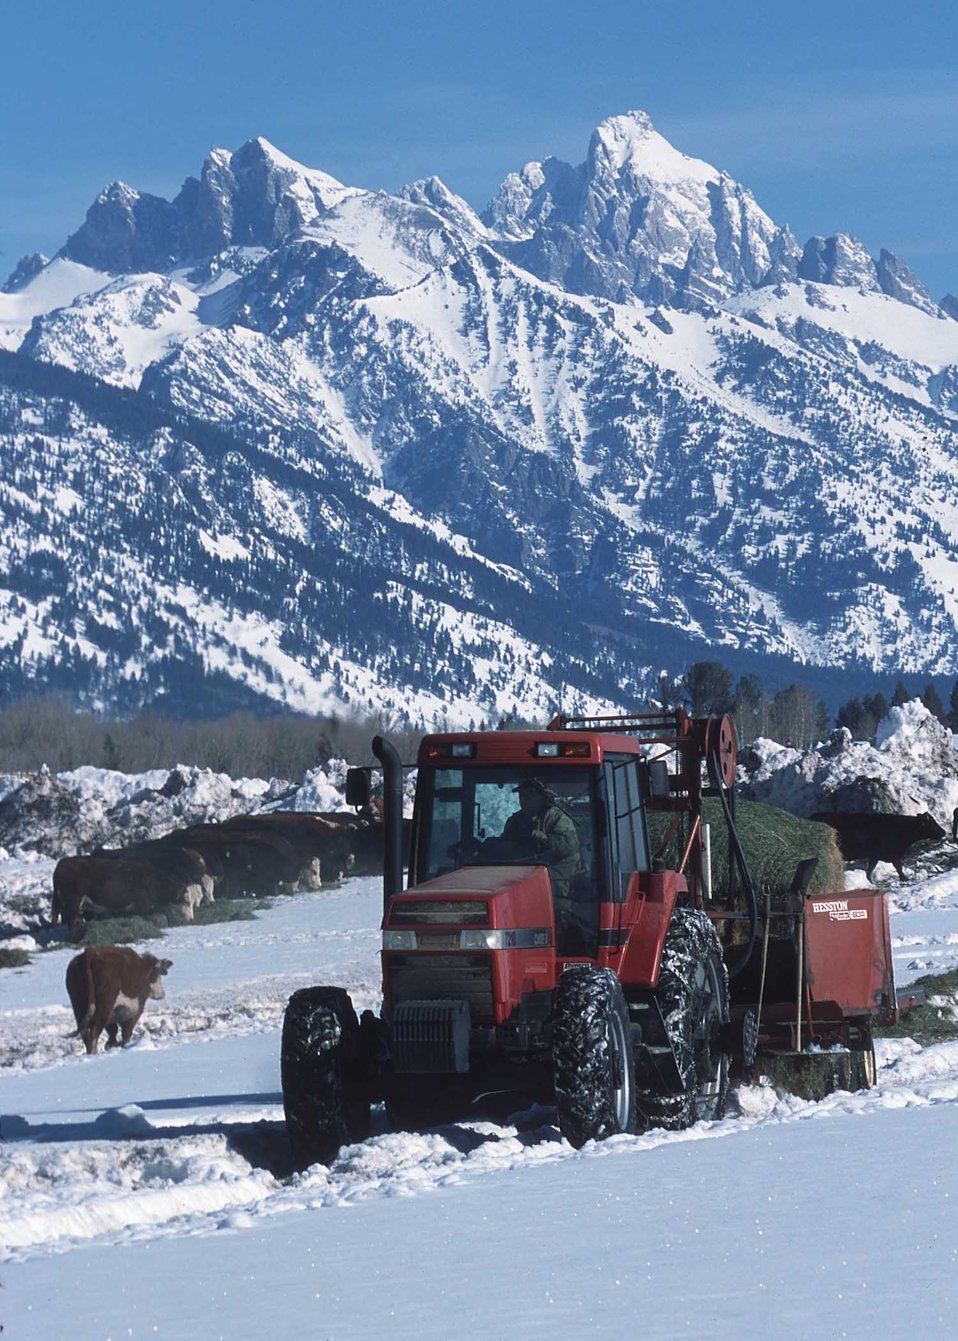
Feeding hay to cattle in deep snow conditions. Jackson, Wyoming.